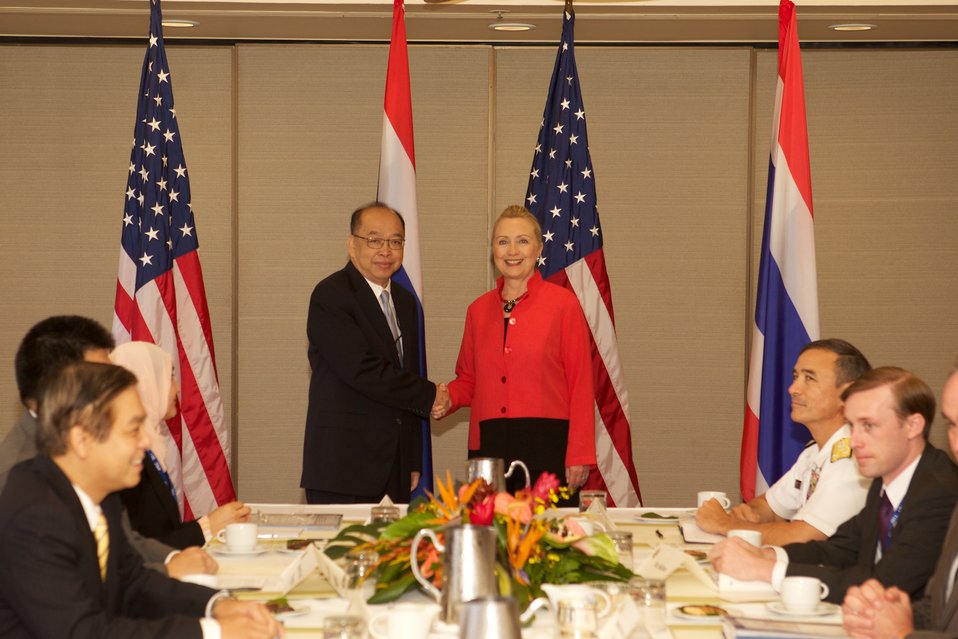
Secretary Clinton Meets With Thai Foreign Minister Tovichakchaikul

U.S. Secretary of State Hillary Rodham Clinton meets with Thai Foreign Minister Surapong Tovichakchaikul in Bangkok, Thailand, on November 16, 2011.